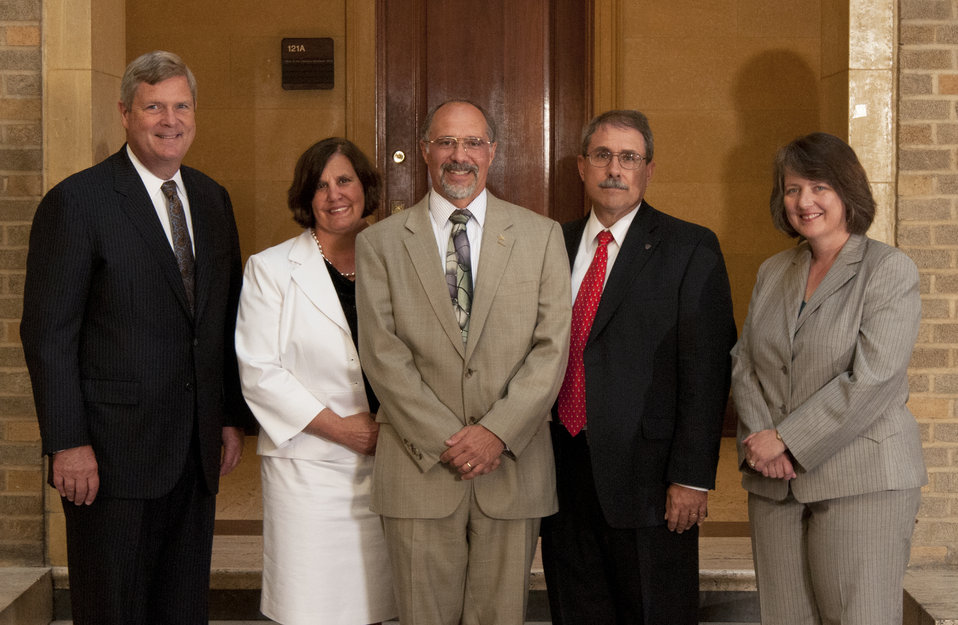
Agriculture Secretary Tom Vilsack and Deputy Agriculture Secretary Kathleen Merrigan with Honor Award Group Agricultural Technology, Innovation Partnership Program, Agricultural Research Service (ARS) on the patio of the U.S. Department of Agriculture in Washington, D.C. on Wednesday, Sept. 12, 2012. The Agricultural Technology Innovation Partnership Program created the Agricultural Technology Innovation Partnership (ATIP) program, and used the ATIP network to provide rural farmers and businesses USDA technology-based solutions to their regional agricultural problems.